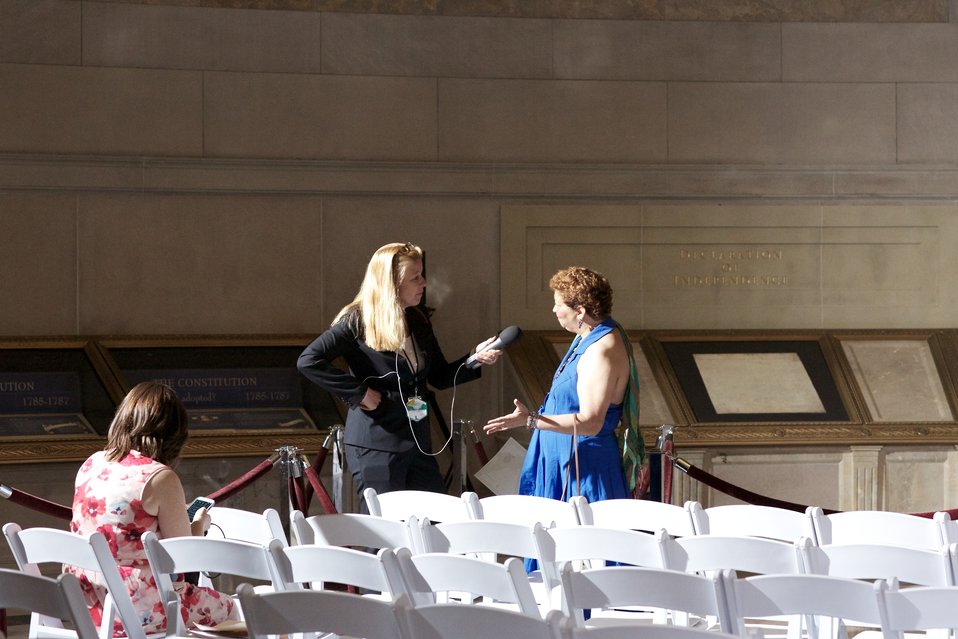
Naturalization Ceremony with Michelle Obama